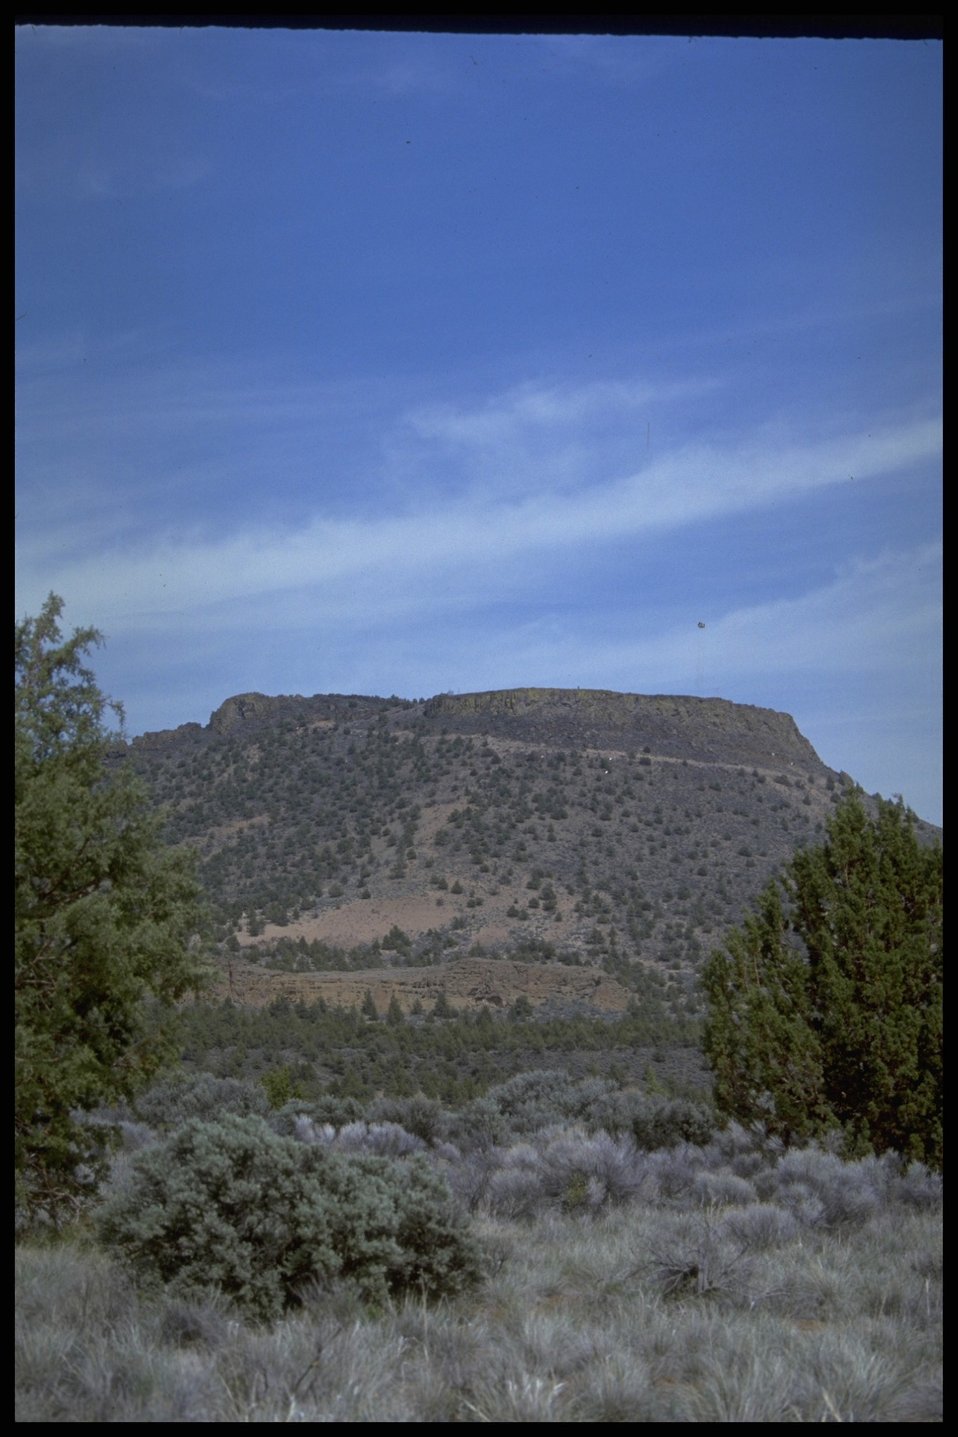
Far shot of Table Rock, Lakeview District.